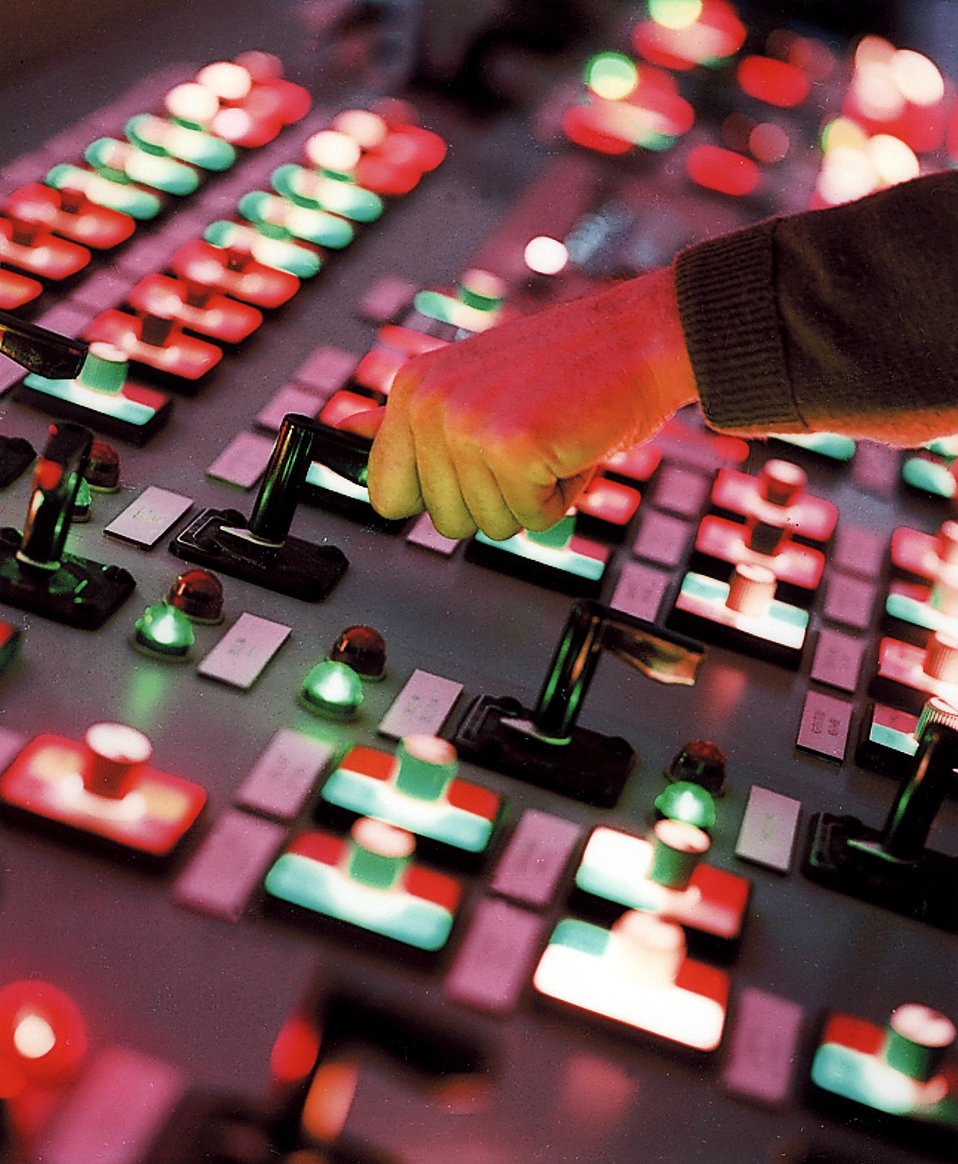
CONTROL PANEL OF NUCLEAR RESEARCH AND FACILITIES.